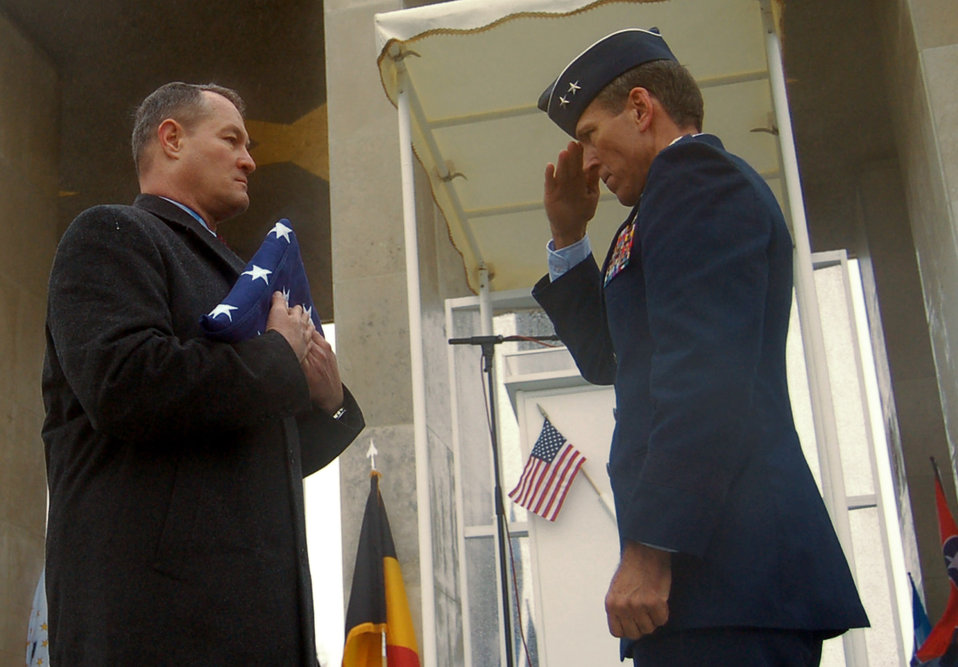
World War II MIAs recovered in Germany

Maj. Gen. Thomas B. Wright salutes a folded flag held by U.S. Army retired Brig. Gen. Steven R. Hawkins to pay respects to the nine fallen Airmen of the McMurray Crew in the Army Air Corps who are no longer missing in action Feb. 20 at the Henri-Chapelle Cemetery and Memorial in Belgium. The B-24 bomber crew's remains were discovered after more than 60 years in a field southwest of Berlin. General Wright is the operations deputy chief of staff of operations for Supreme Headquarters Allied Powers Europe. General Hawkins is the director of the European region for the American Battle Monuments Commission.